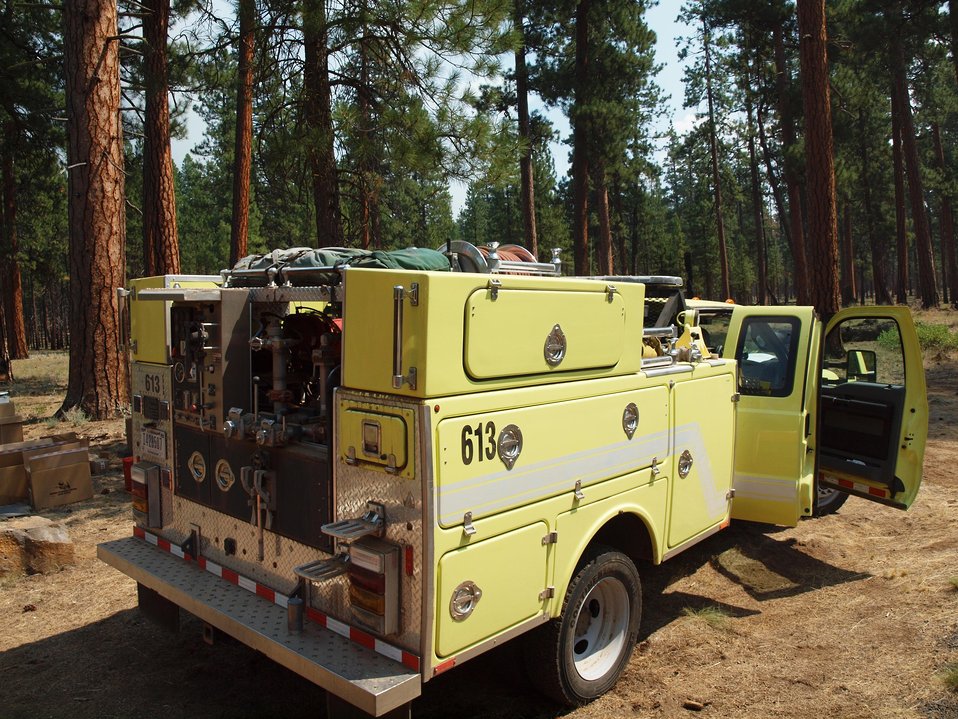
A type 6 fire engine is used on the fire line at the Green Ridge Fire. The Green Ridge Fire in the Deschutes National Forest near Sisters, OR began on Jul. 31, 2013 by lightning has consumed approximately 1,510 acres and is approximately 95% contained.